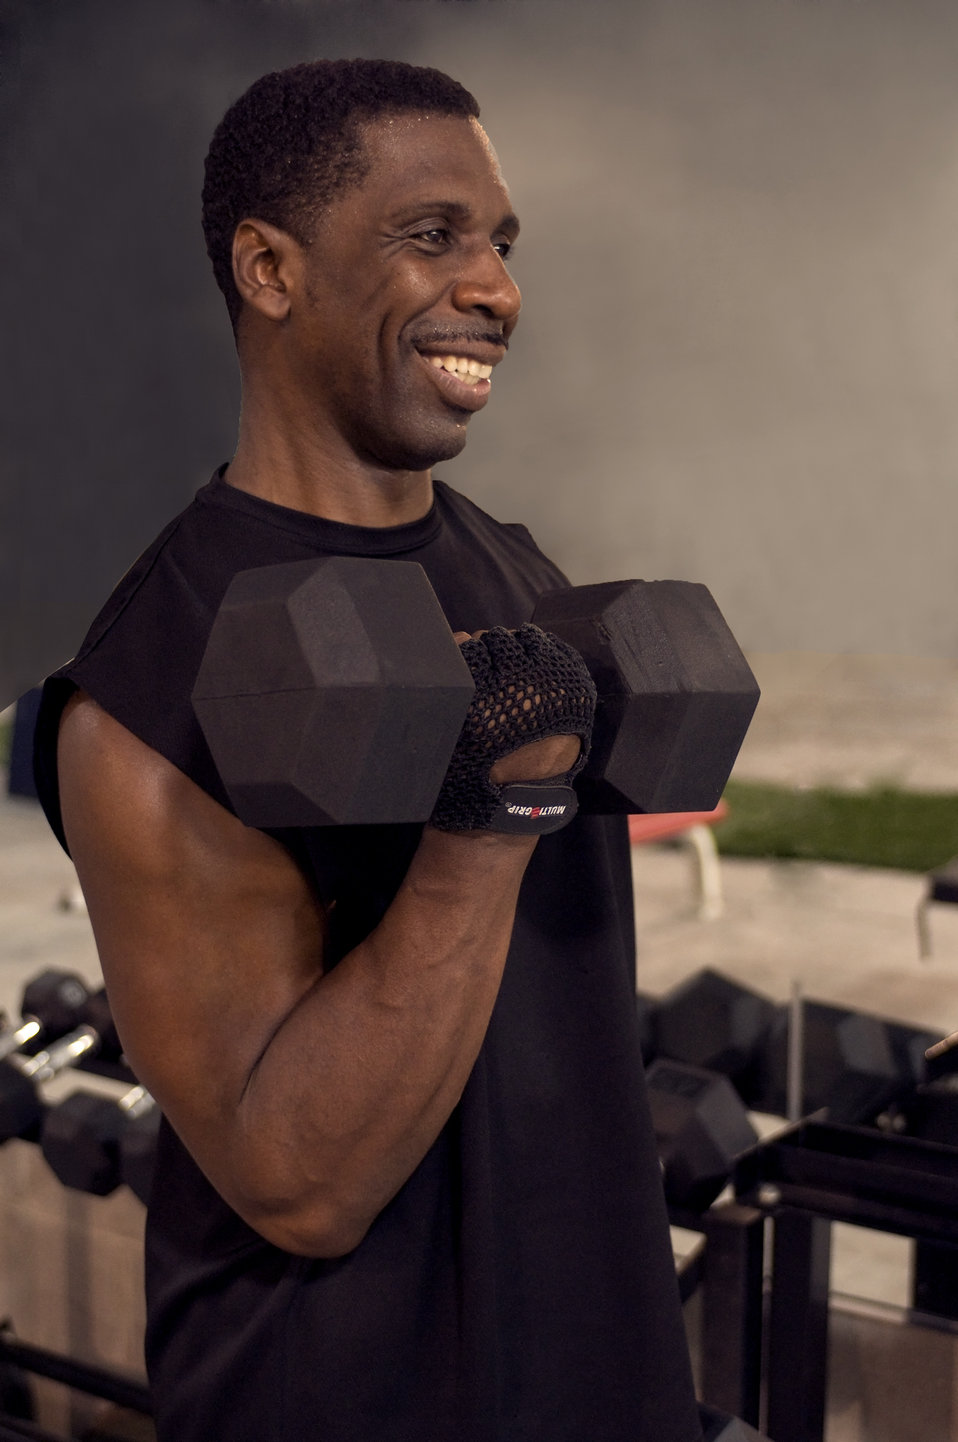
The man pictured here from a right anterior-oblique view, was inside a gymnasium performing various strength-training exercises. At this point in his exercise routine, he was performing curls using a 35lb dumbbell held in each clenched fist. Here, his right arm had been flexed, bringing the weight up to shoulder level, while his left arm was still extended, its weight at hip level. Hopefully, he was also keeping well hydrated during his exercise regimen by drinking fresh water during his workout.